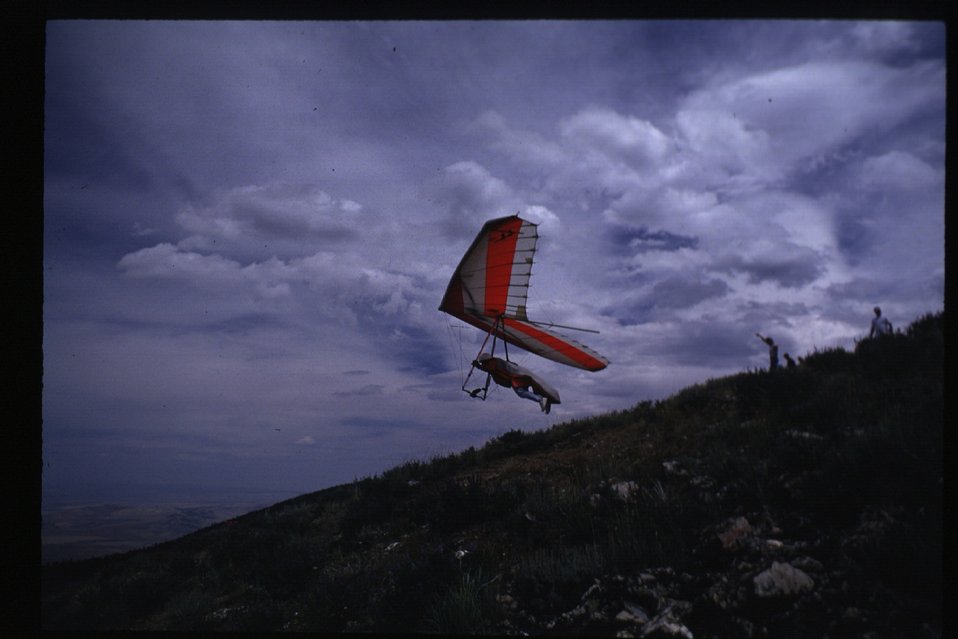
Hang Gliders on King Mountain Arco Idaho Idaho Falls Field Office USRD Upper Snake River District